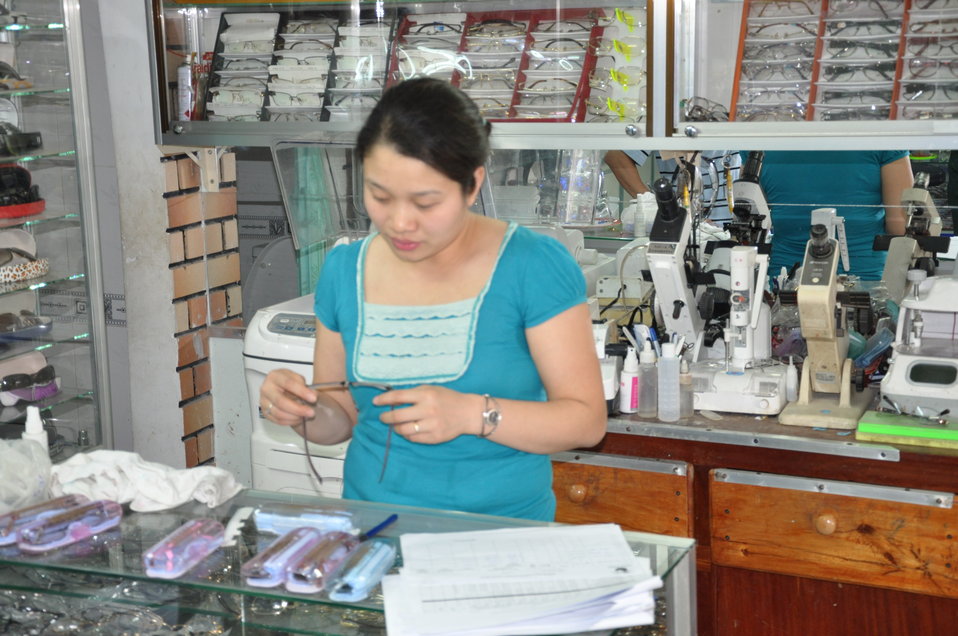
Eye glasses production in Kon Tum Province